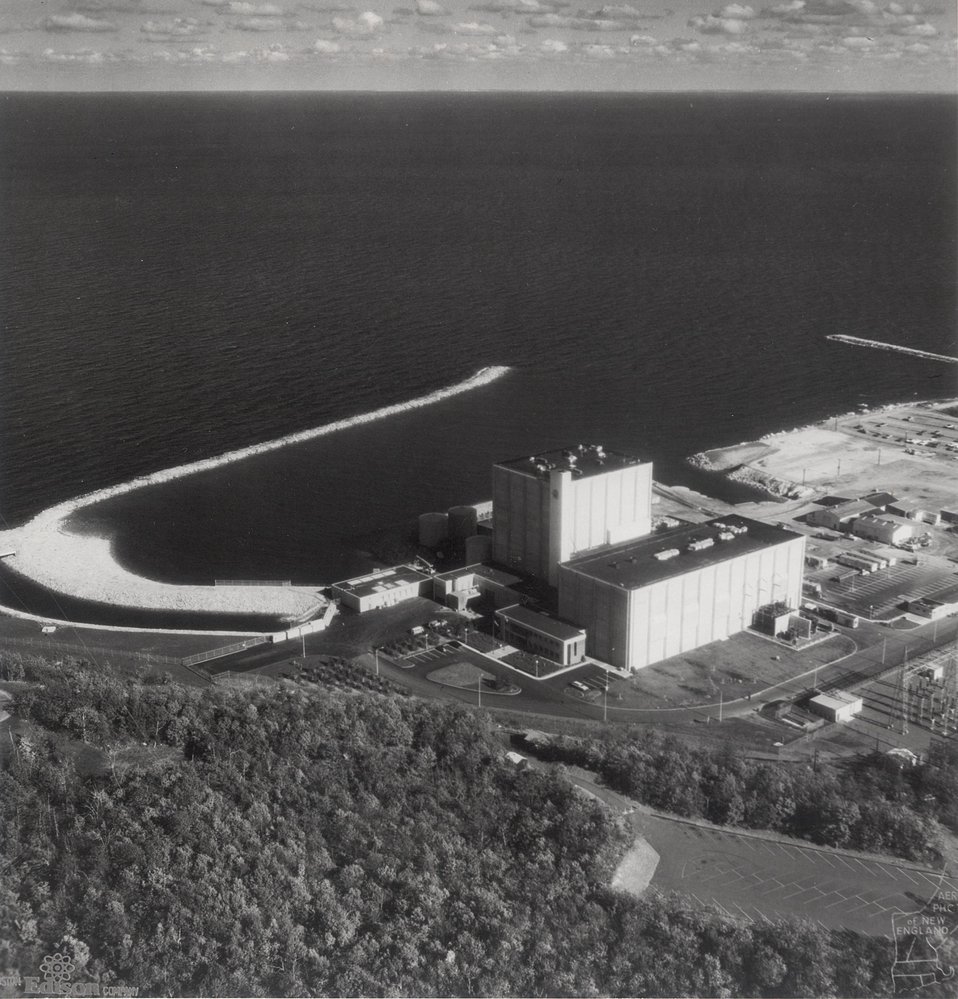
Boston Edison Company's Pilgrim Station Unit 1 at Plymouth, Mass. An 1800 foot breakwater juts from a two-acre recreation spot called the 'Pilgrim Shorefront.' Circa 1972.